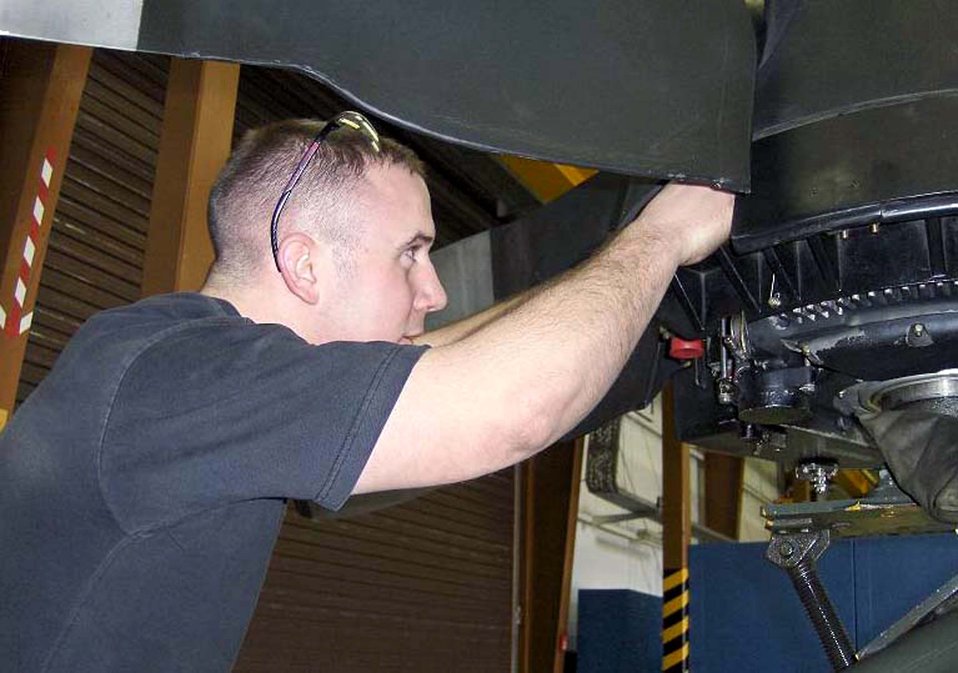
Ramstein prop shop keeps blades turning

Senior Airman David Petter performs routine maintenance on one of the many propellers that come into the propeller repair shop at Ramstein Air Base, Germany. Airman Petter is a C-130 Hercules mechanic with the 86th Maintenance Squadron.